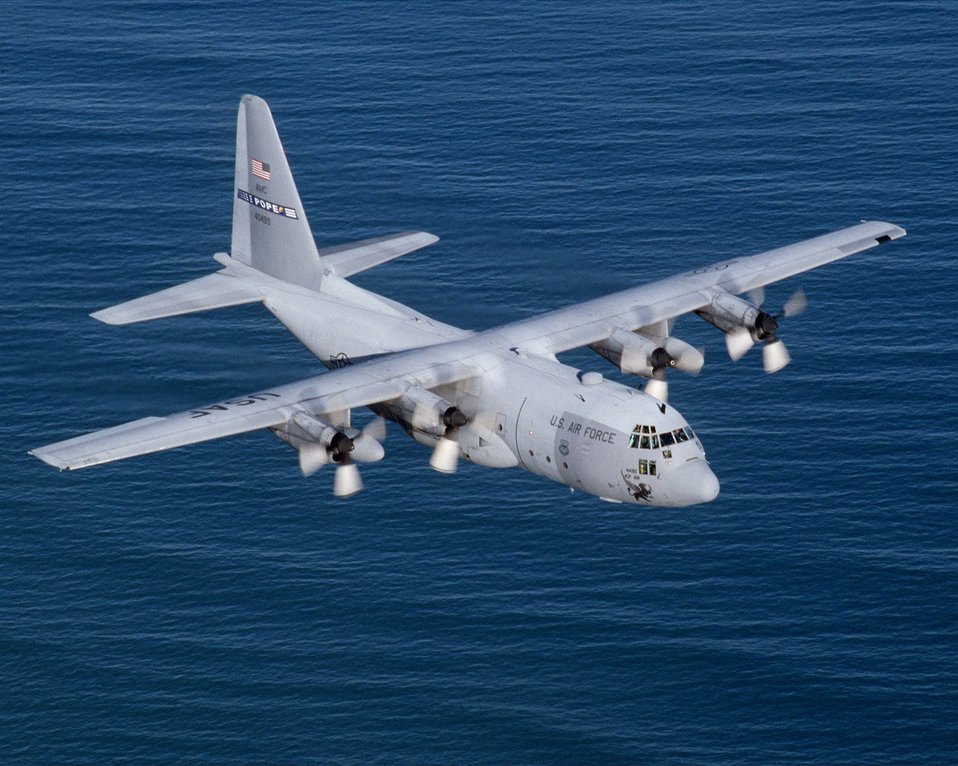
Blue waters

OVER THE ATLANTIC OCEAN -- A C-130 Hercules from the 2nd Airlift Squadron, Pope Air Force Base, N.C., flies over the Atlantic Ocean. The C-130 Hercules primarily performs the intratheater portion of the airlift mission. The aircraft is capable of operating from rough, dirt strips and is the prime transport for paradropping troops and equipment into hostile areas.